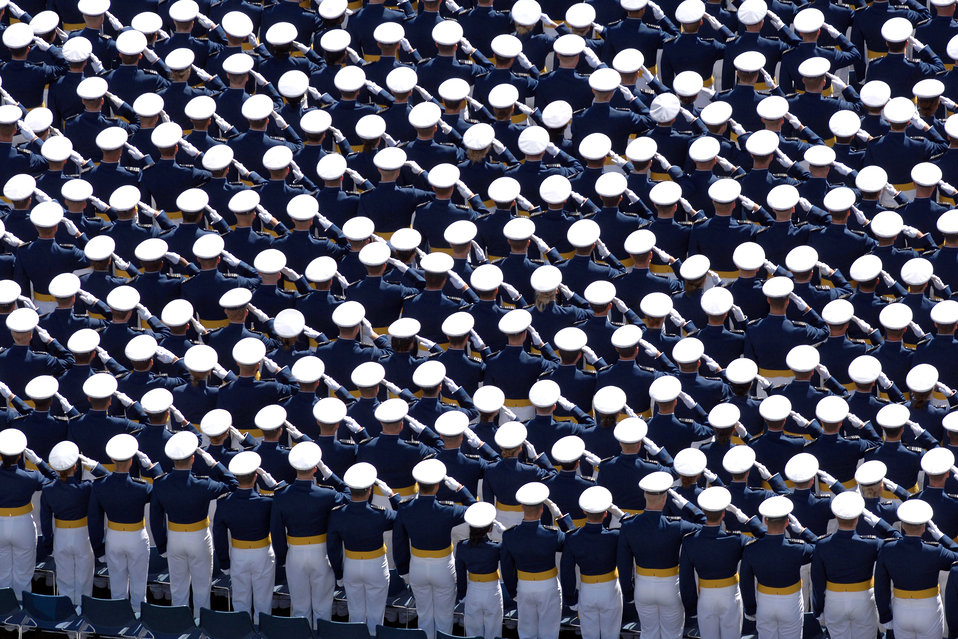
From cadet to lieutenant

Members of the U.S. Air Force Academy Class of 2007 salute during the playing of the national anthem during the commencement ceremony May 30 in Colorado. The ceremony marks the culmination of four years at the academy and their transition from cadet to the Air Force's newest second lieutenants.